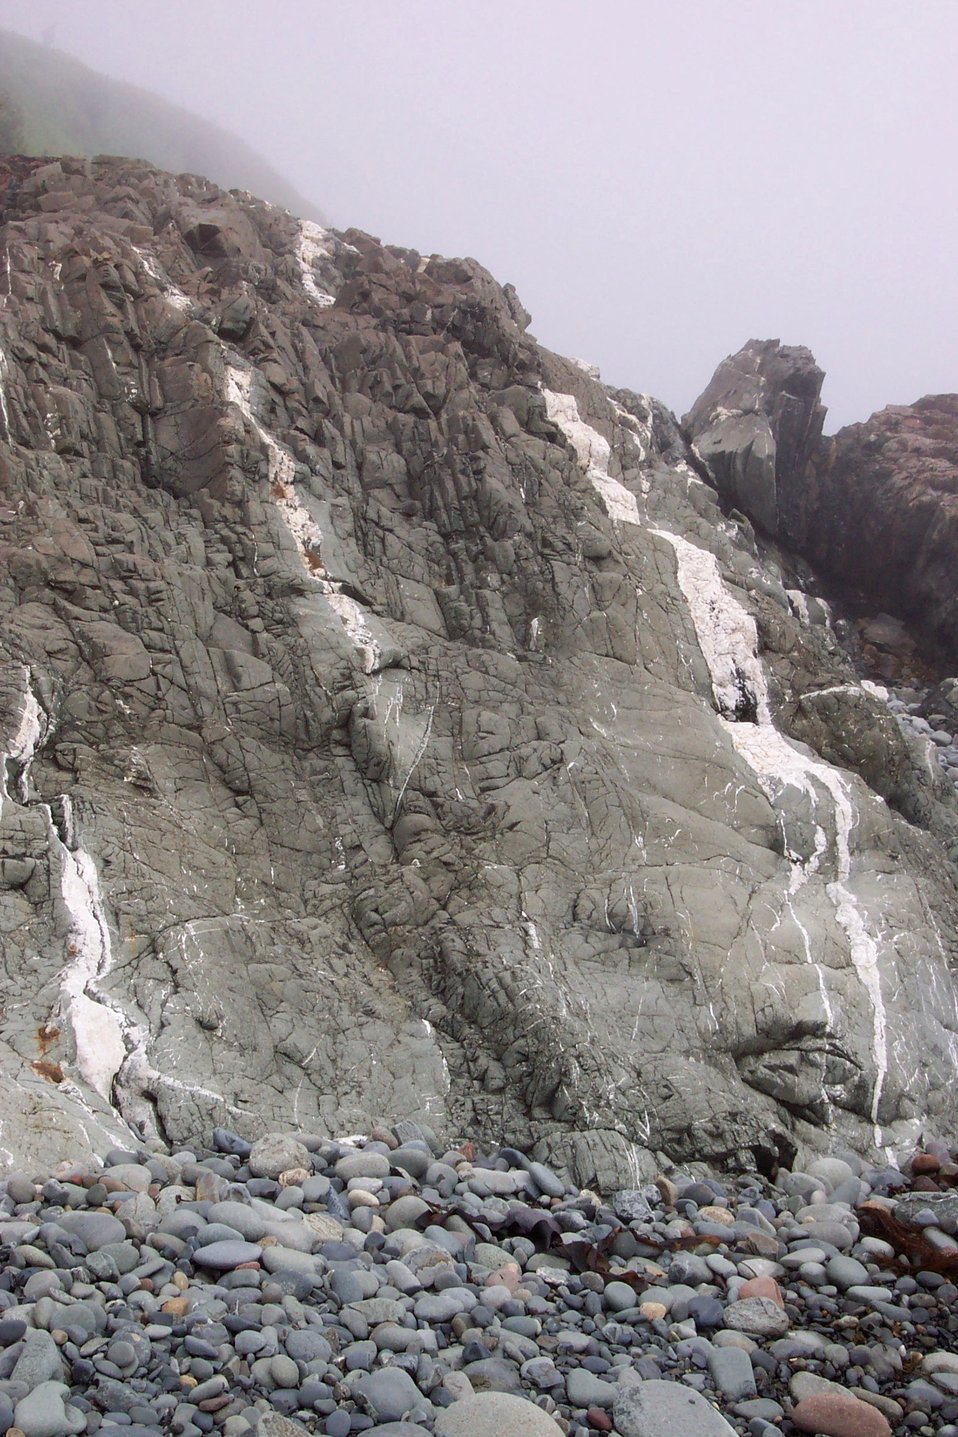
Metamorphic rocks smoothed by the surf at West Quoddy Head.